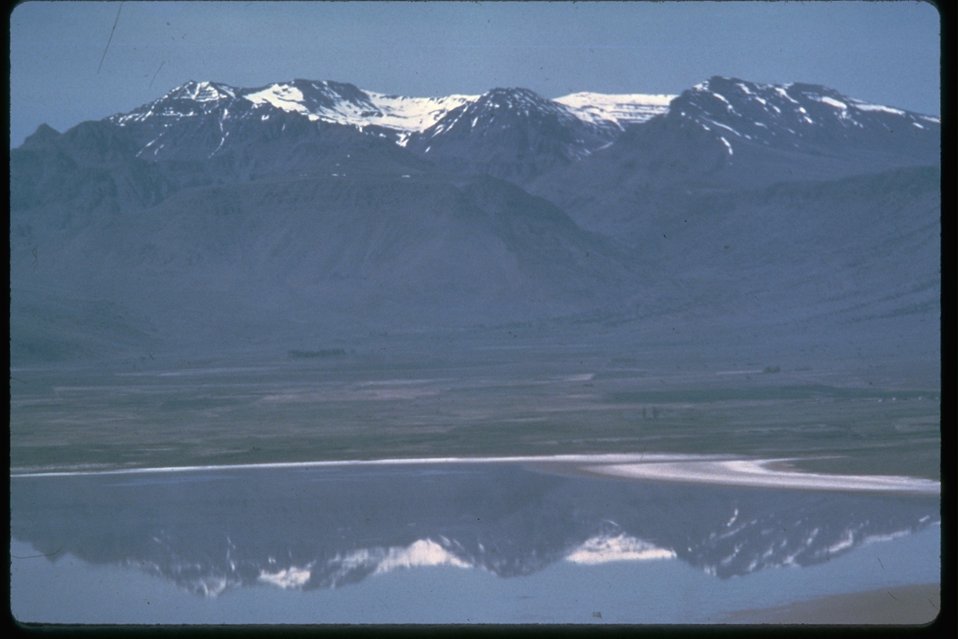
Alvord Lake in Wildhorse Canyon in the Steens Mountain Area.